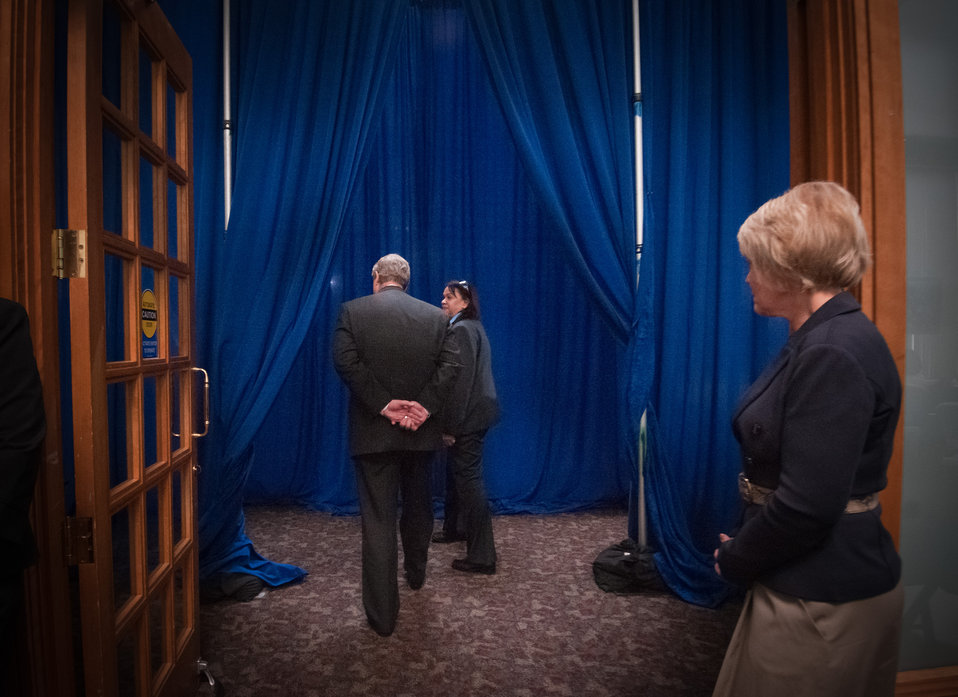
Agriculture Secretary Tom Vilsack leaves the 'green room,' while his wife Christie Vilsack looks on. The Secretary appeared on a live broadcast on MSNBC Morning Joe’s s Joe Scarborough and Mika Brzenzinski to kick off the celebration of the 150th Anniversary of the U.S. Department of Agriculture, in Washington, D.C., on Tuesday, May 15, 2012.